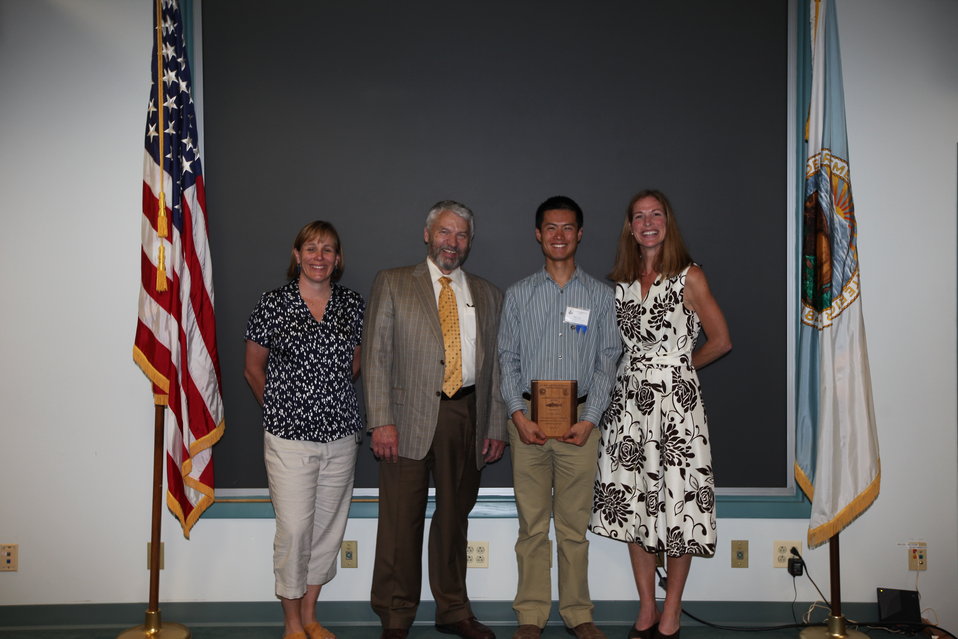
Mao Lin, Gulf of Maine Coastal Program Office, recieved the Diverstiy and Inclusion Award.
From left to right: Deputy Regional Director Deb Rocque, Deputy Director Rowan Gould, Mao Lin, and Regional Director Wendi Weber